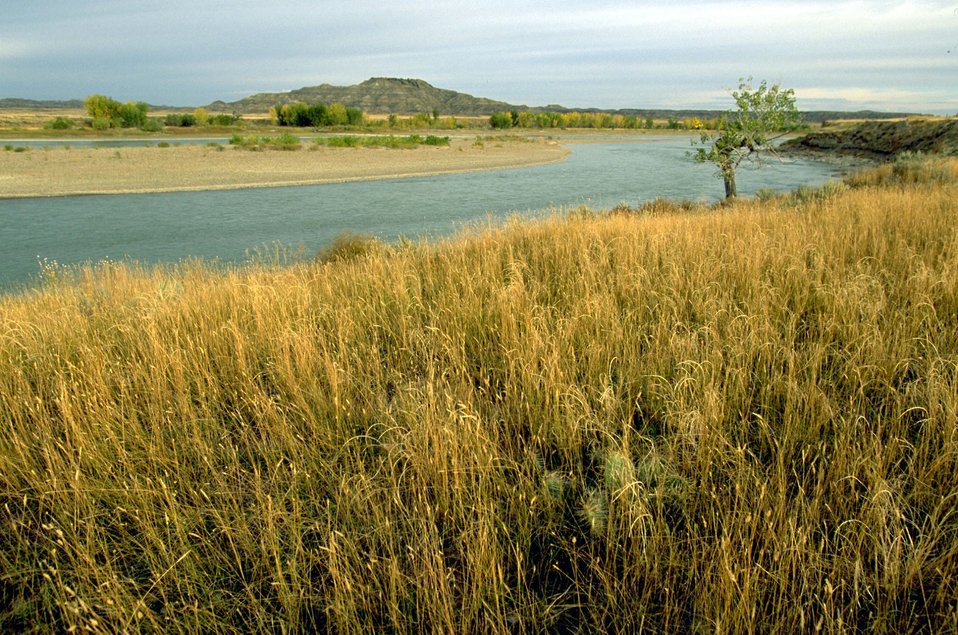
Tall grass along the bank of the Yellowstone River - Sheridan Butte in the background